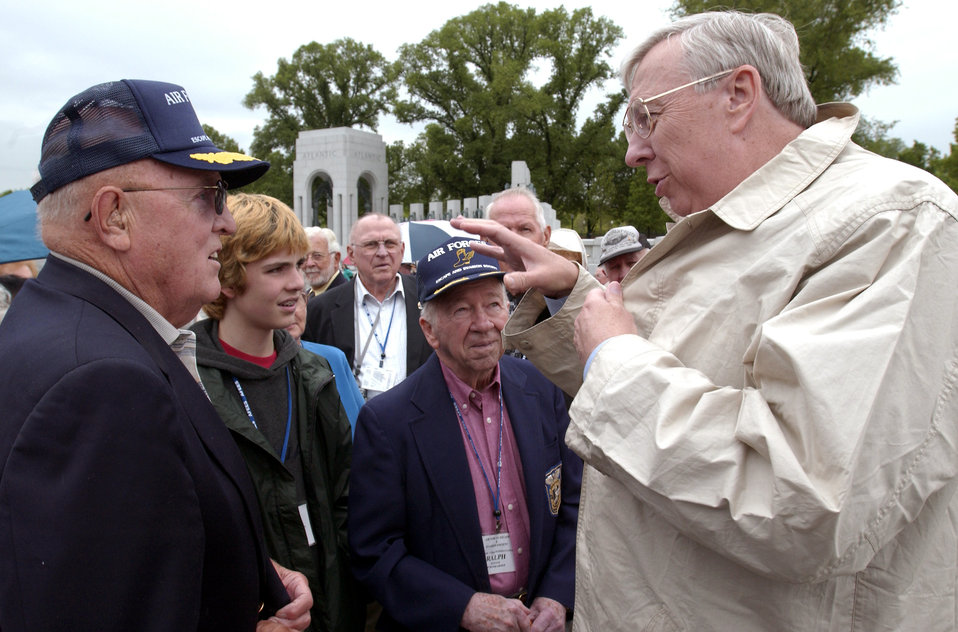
Air Force Escape and Evasion Society

WASHINGTON -- Secretary of the Air Force Dr. James G. Roche (right) visits with members of the Air Forces Escape and Evasion Society at the newly opened World War II Memorial here May 3. The society, formed in 1964 by former B-17 pilot Ralph Patton (center in hat), comprises both U.S. Airmen who successfully evaded capture after bailing out of their aircraft over Europe in World War II and a number of the European civilians who helped them.